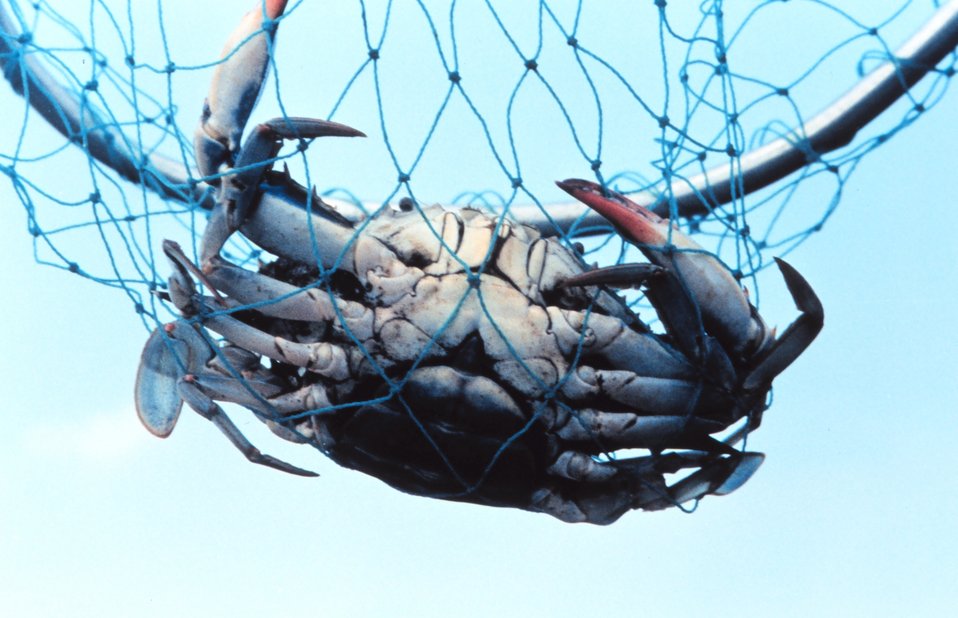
A mature female blue crab (Callinectes sapidus), known colloquially as a 'sook.' Note the apron, shaped like the Capitol building, and the red-tipped claws.